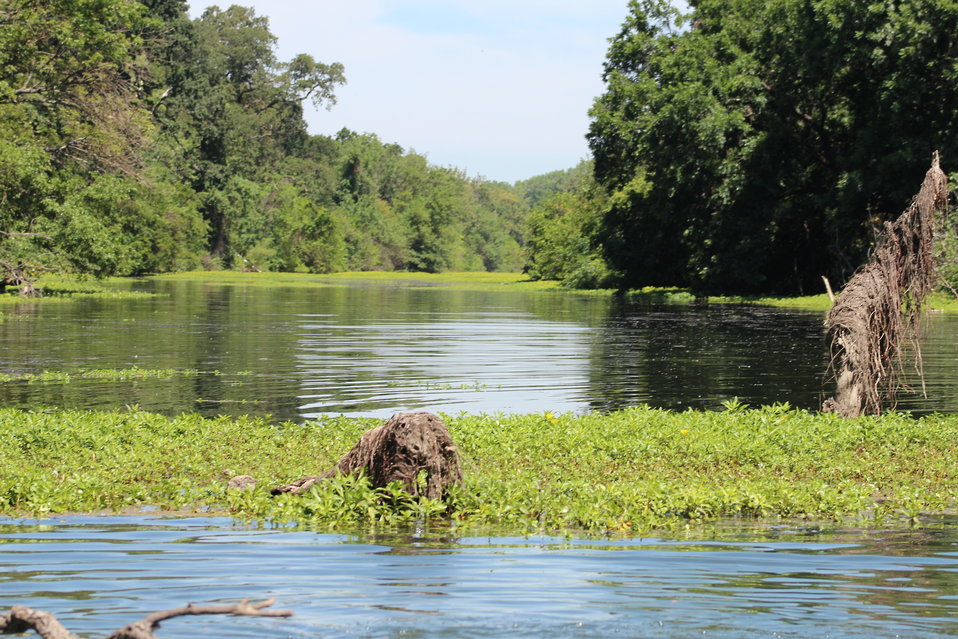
Habitat for Fish in the Sacramento River

Increase in cover like logs and different plants provides more habitat for fish in the Sacramento River.